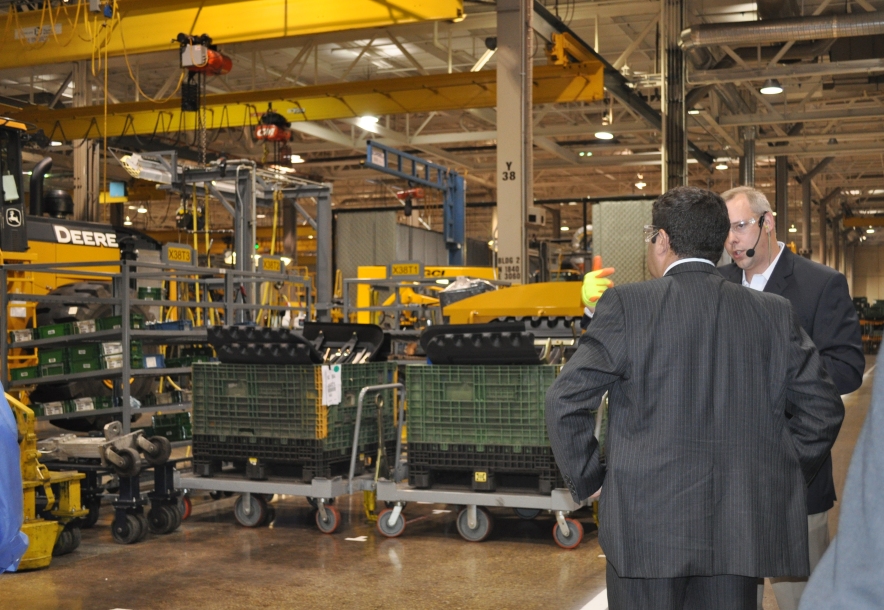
Deputy Secretary Neal Wolin visits Deere and Co.

Deputy Secretary Neal Wolin was in Moline, IL, where he toured the John Deere Davenport Works Construction and Forestry Facility.